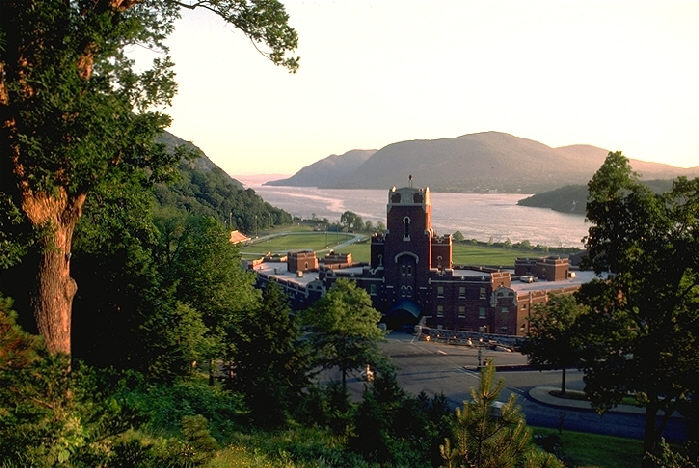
West Point, United States Military Academy.